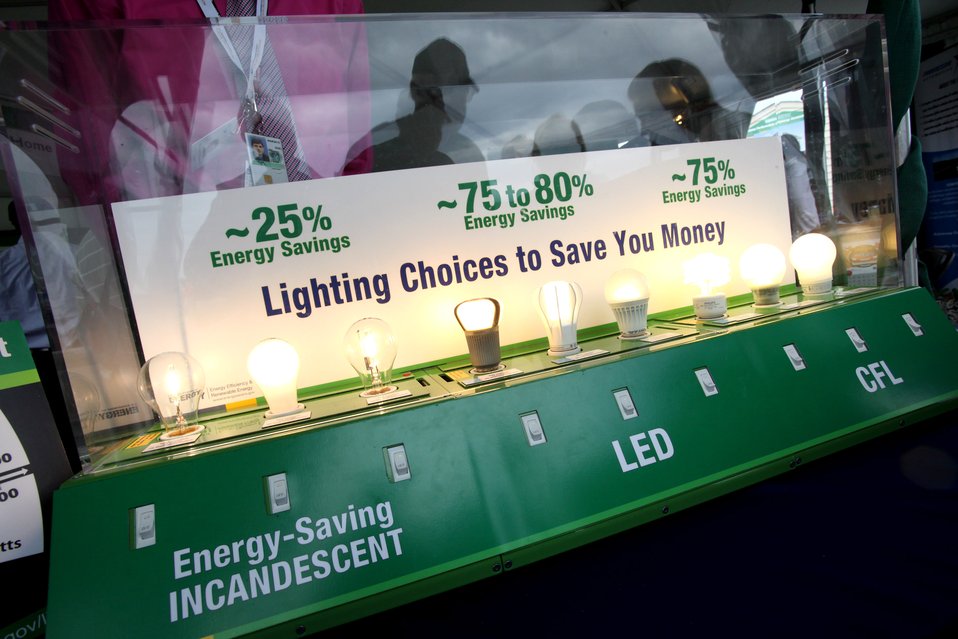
Shown are energy efficient light bulb options in the exhibit tent at the U.S. Department of Energy Solar Decathlon, Washington, DC, September 29, 2011.(Credit: S.Paltera/ U.S. DOE / Solar Decathlon)
The Solar Decathlon is a competition that challenges college and university teams from around the world to design, build, and operate solar-powered houses that are affordable, highly energy efficient, attractive, and easy to live in. The 2011 teams and their houses represented a broad range of design solutions, geographic locations and climate, and were targeted toward urban, suburban and rural settings. The houses were intended for different housing markets, including lower-income, disaster relief, retirement, and single family.